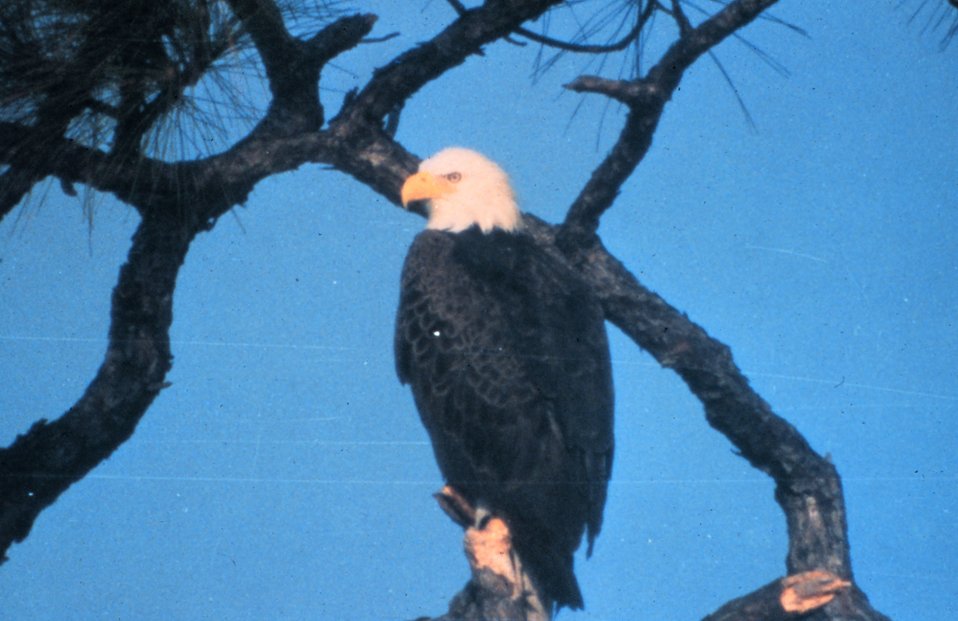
The bald eagle is one of 14 threatened and endangered species making their homes within Canaveral National Seashore.